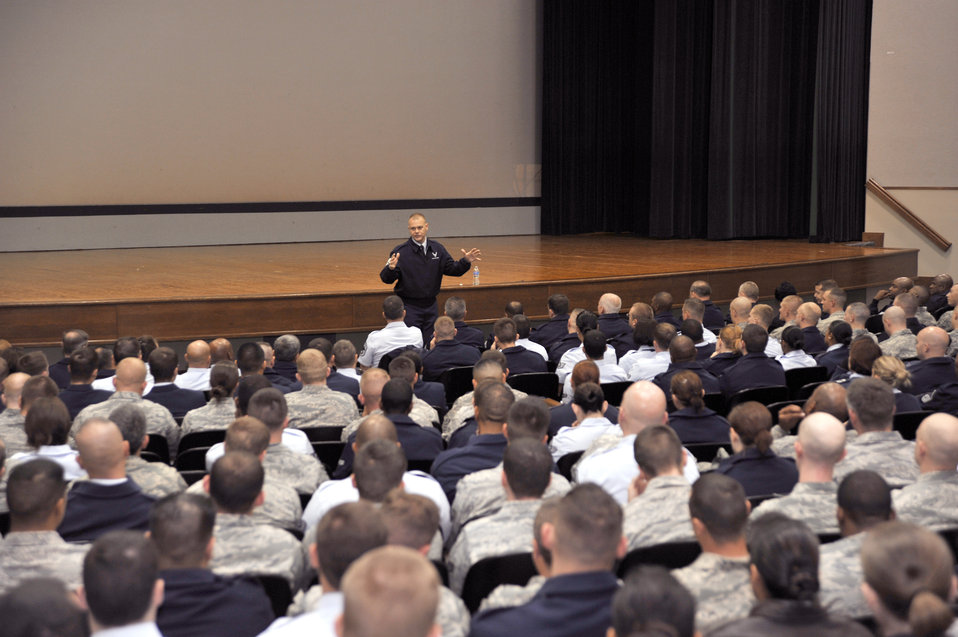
CMSAF visits Andrews, discusses Air Force issues

Chief Master Sgt. of the Air Force James A. Roy speaks to Airmen during an enlisted call Nov. 1, 2010, at Joint Base Andrews, Md. Chief Roy spoke to Airmen about a number of issues facing the Air Force including manning, deployments and suicides.